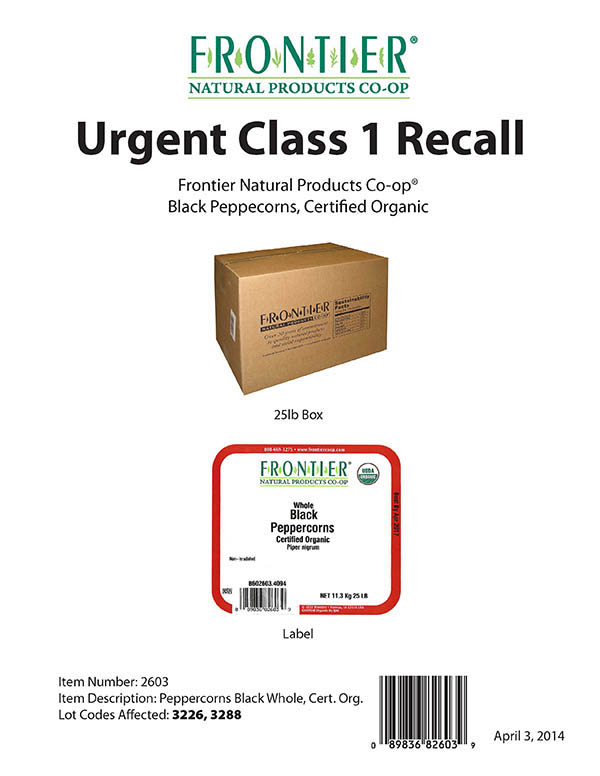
RECALLED – Organic Black Peppercorns

April 4, 2014 – Product Recall – Frontier Natural Products Co-op Initiates Voluntary Class 1 Recall Due to Possible Health Risk from Organic Black Peppercorns.